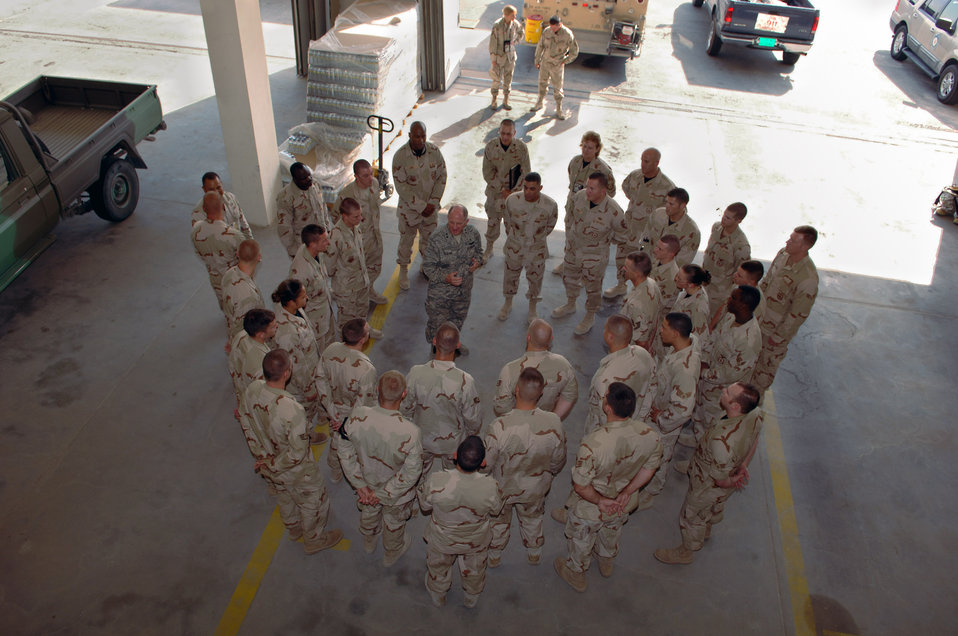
Chief of chaplains visits 379th AEW

Chaplain (Maj. Gen.) Charles Baldwin, Air Force chief of chaplains (center) speaks with Airmen deployed to the 379th Expeditionary Security Forces Squadron Aug. 13.